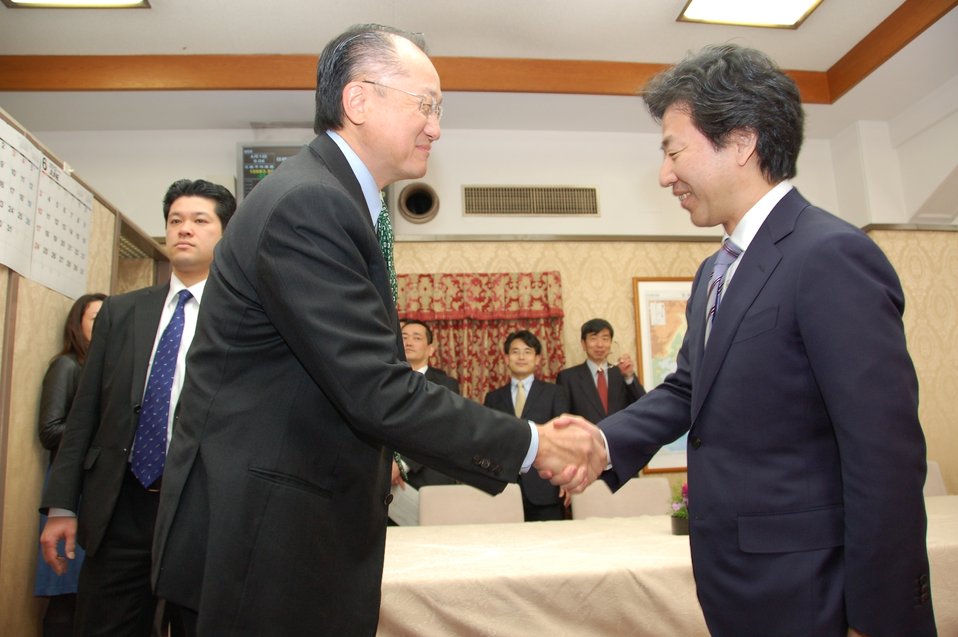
Dr. Jim Yong Kim Meeting with Japanese Finance Minister Jun Azumi

Dr. Jim Yong Kim, U.S. Nominee for the World Bank Presidency, met Sunday, April 1, 2012 with Japanese Finance Minister Jun Azumi in Tokyo, Japan.